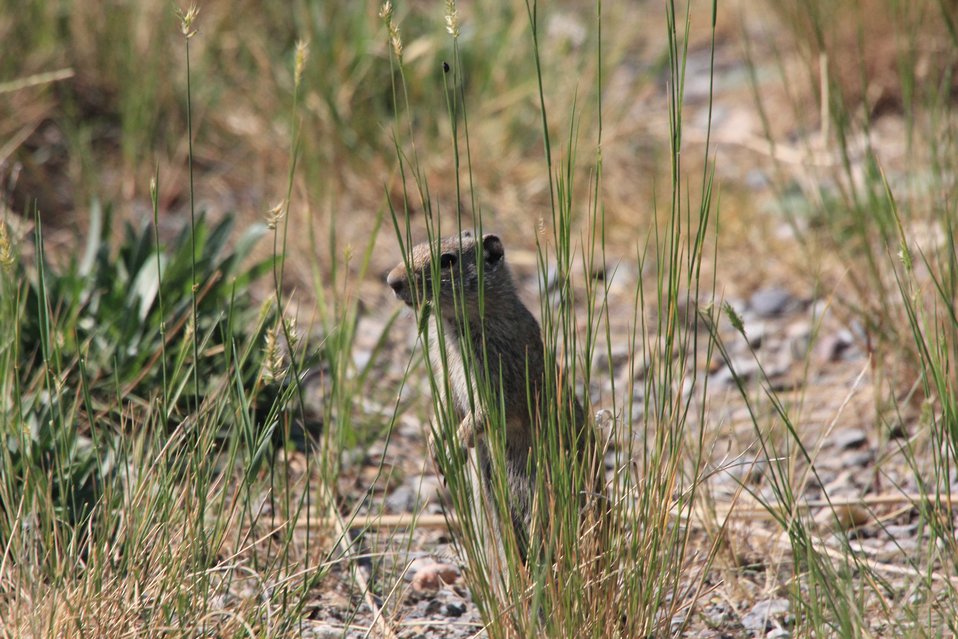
Always Wary of Predators

A Uinta Ground Squirrel stands in an alert position behind a tuft of grass. Uinta Ground Squirrels can be found in southwestern Montana, western Wyoming, southeastern Idaho, and north central Utah.

Credit: USFWS / National Elk Refuge volunteer